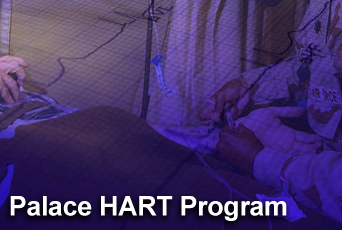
Palace HART Program

As Airmen continue to serve on the front lines of Iraq and Afghanistan, the Air Force continues to serve its wounded warriors and their families, even years after their combat duty. This dedicated service comes from the Palace HART program, which means Helping Airmen Recover Together.